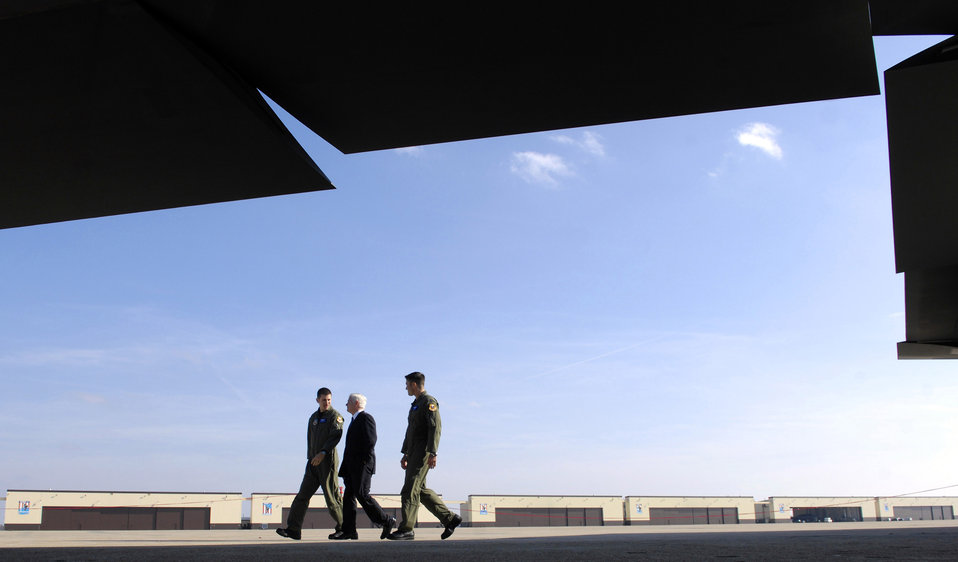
Showing spirit

B-2 Spirit pilots Capts. Adam Cuquet and Adam Goodpasture show Secretary of Defense Robert M. Gates one of the stealth bombers during his visit to Whiteman Air Force Base, Mo., Nov. 20.